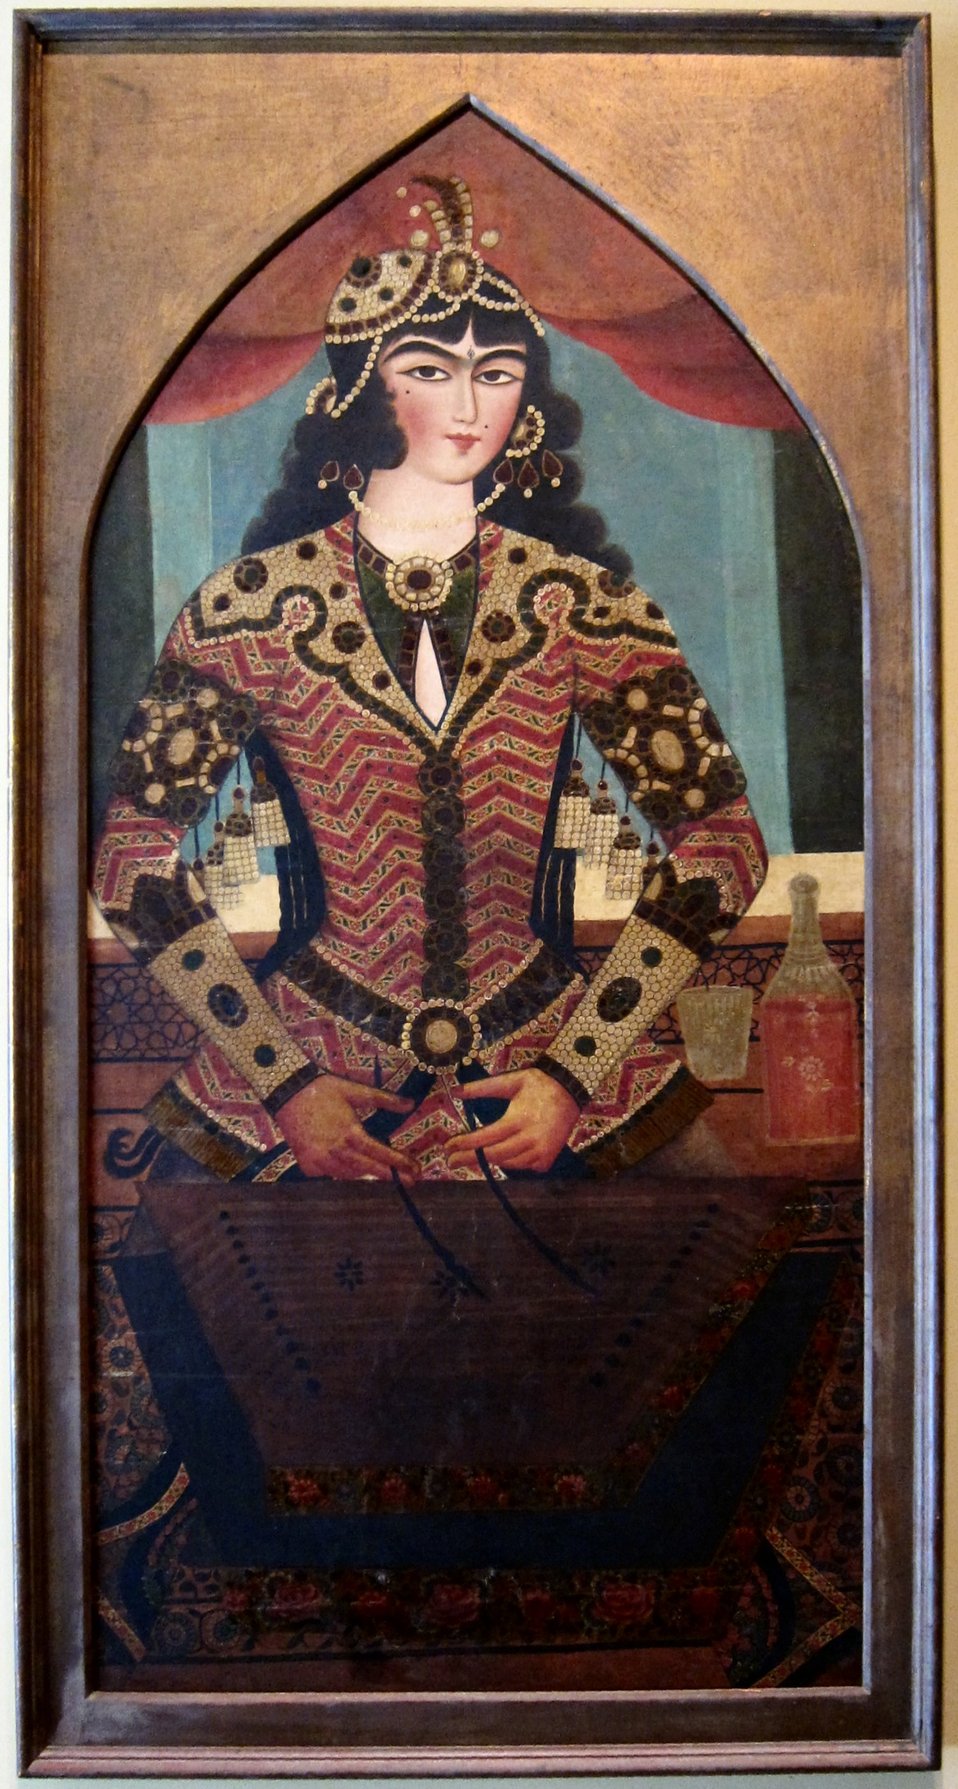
'Female Musician', anonymous painting from Iran, c. 1825, oil on canvas, Honolulu Academy of Arts